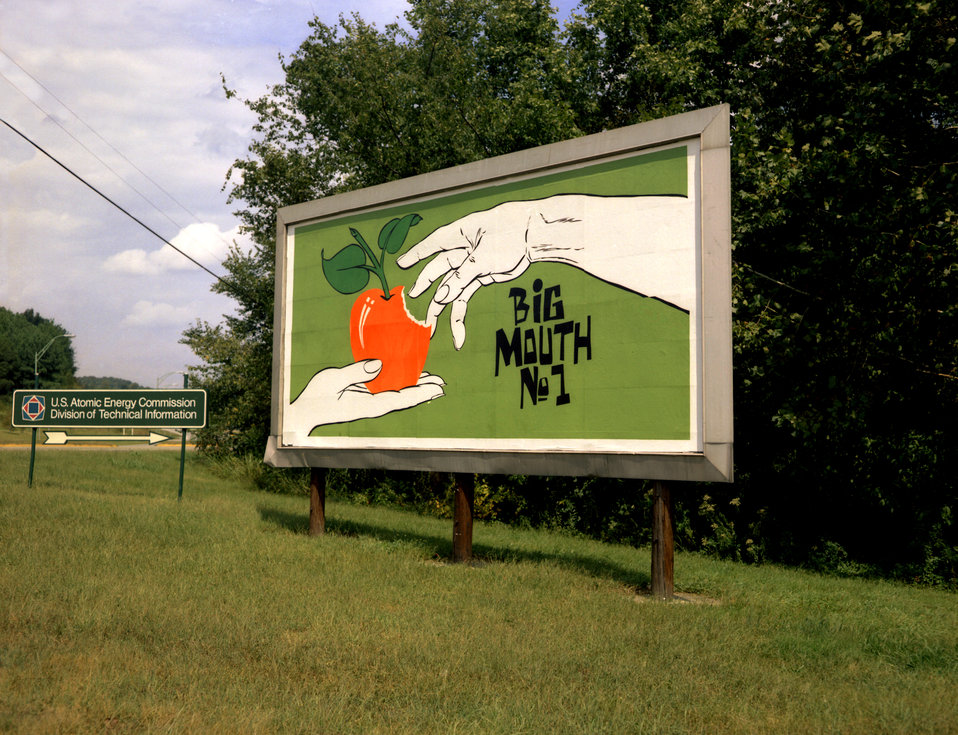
Security Sign at Elsa Gate Big Mouth # 1

70-274c DOE Photo by Frank Hoffman Oak Ridge Tennessee 10-5-1970